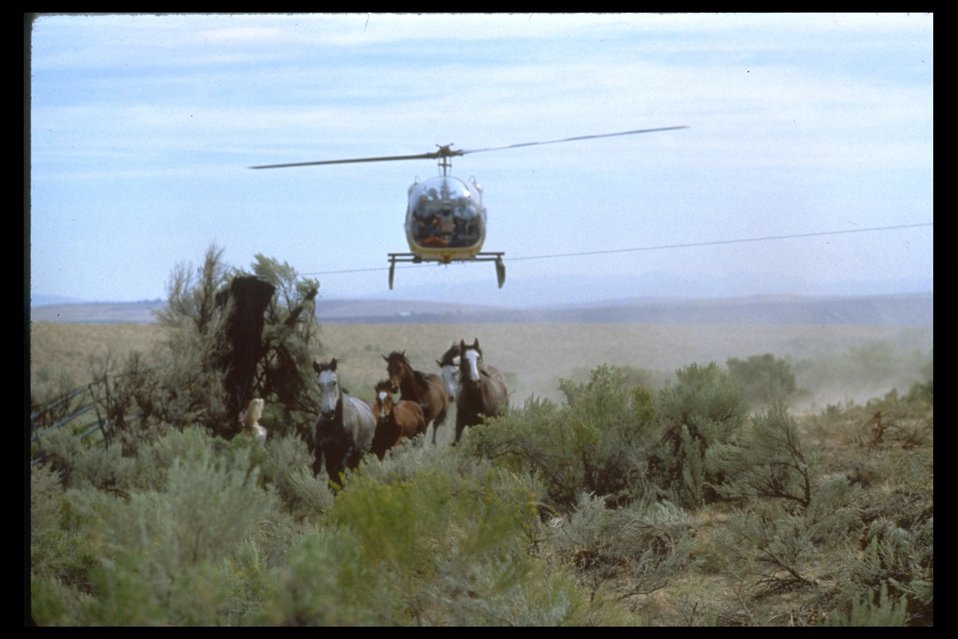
Helicopter drives horses into trap.